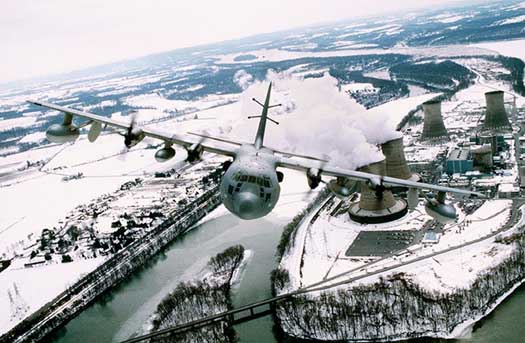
Commando Solo

FILE PHOTO -- Flying over the Pennsylvania countryside in a training mission, the EC-130E/J Commando Solo is a specially-modified four-engine Hercules transport that conducts information operations, psychological operations and broadcasts information in various frequencies. The 193rd Special Operations Wing, Harrisburg International Airport, Pa., has total responsibility for the Commando Solo missions.